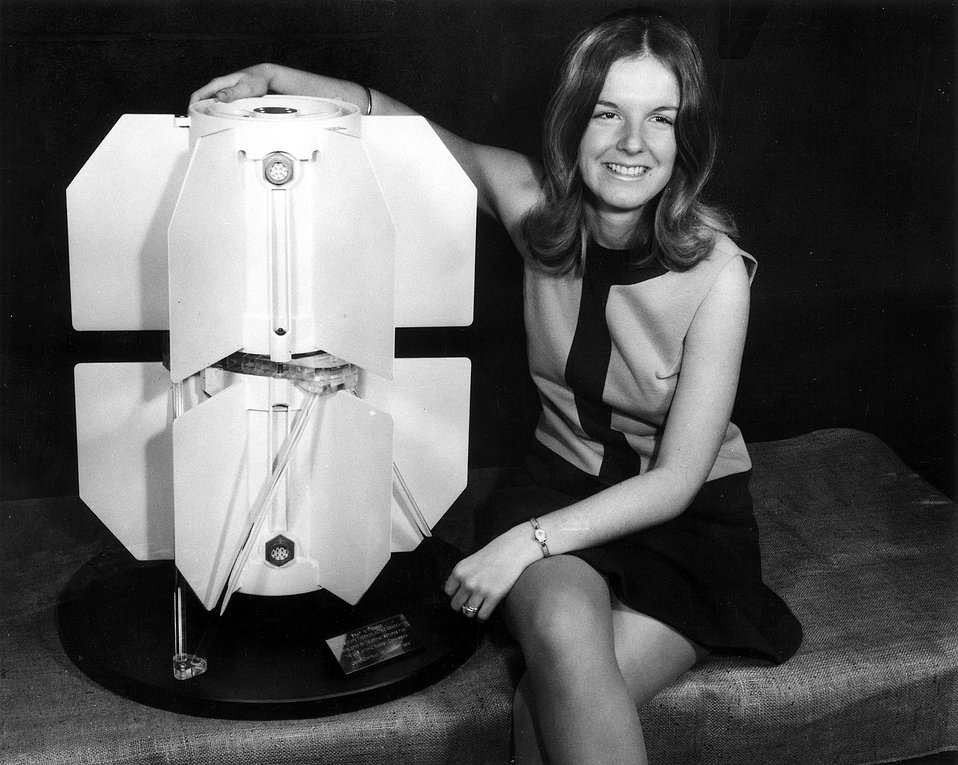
Radioisotope Thermometric Generator... An actual size model of one of four SNAP-19 radioisotope thermometric generators used to furnish electric power for data collection and transmission from the Pioneer 10 Jupiter spacecraft.